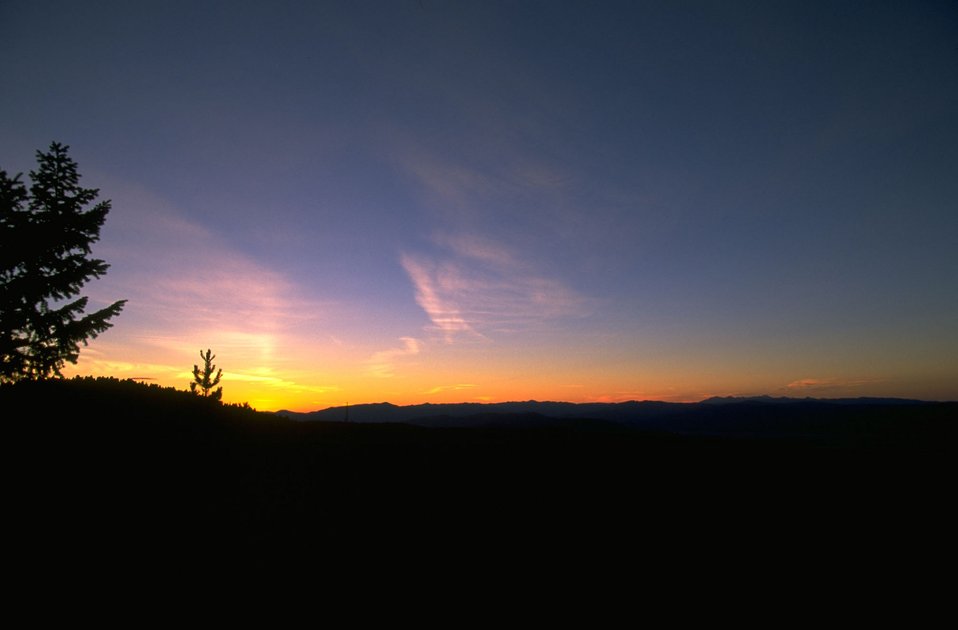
Garnet Back Country Byway -- view at sunrise